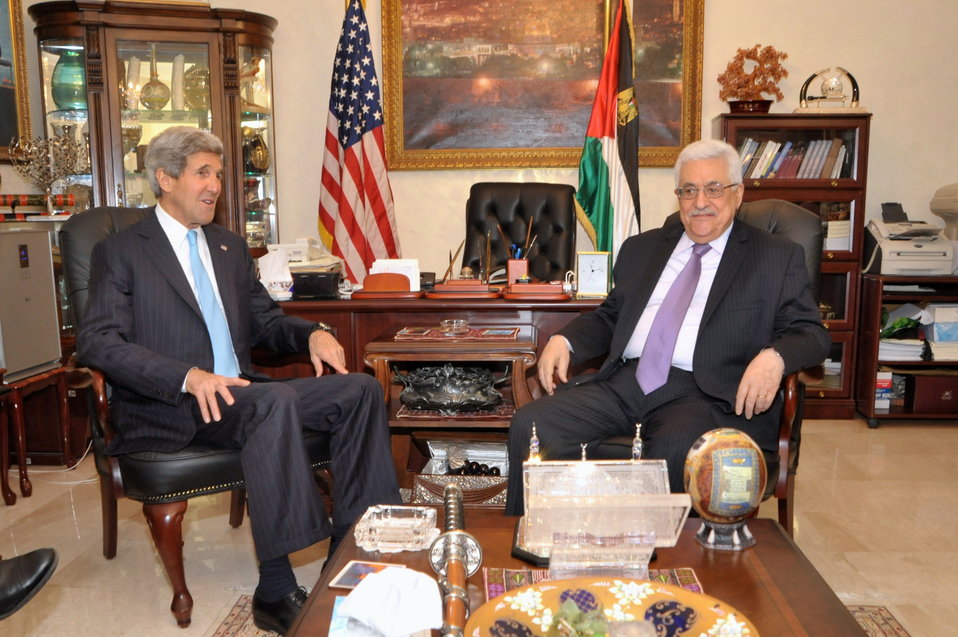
Secretary Kerry Meets With Palestnian Authority President Abbas

U.S. Secretary of State John Kerry sits with Palestinian Authority President Mahmoud Abbas before a meeting in Amman, Jordan, on June 29, 2013.